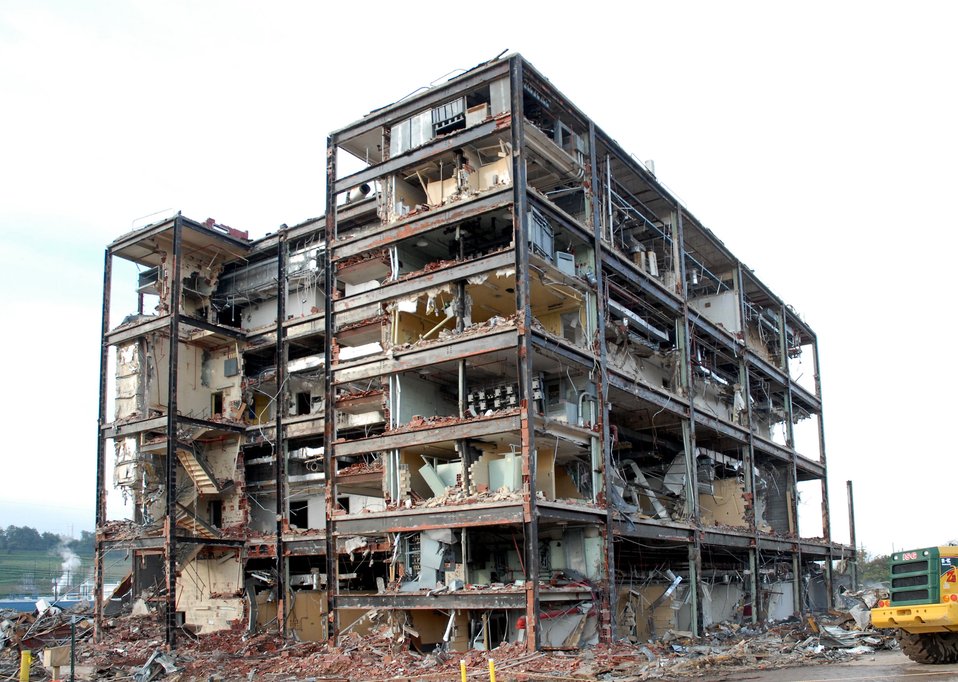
Y-12's Building 9211